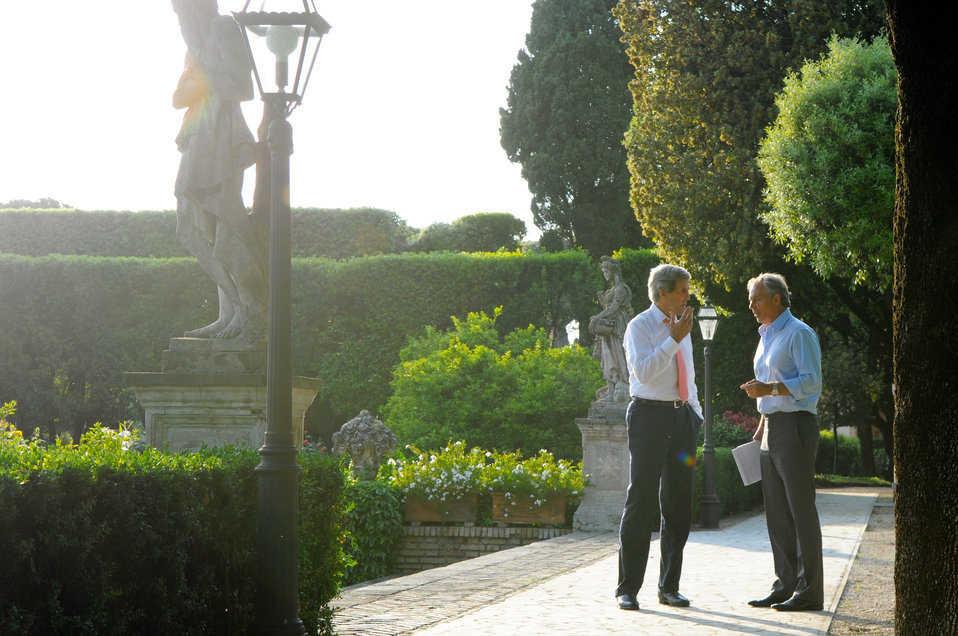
Secretary Kerry and Quartet Representative Blair Discuss Middle East Peace

U.S. Secretary of State John Kerry discusses Middle East peace with Quartet Representative Tony Blair at the Villa Taverna, the U.S. ambassador's residence in Rome, Italy, on May 9, 2013.